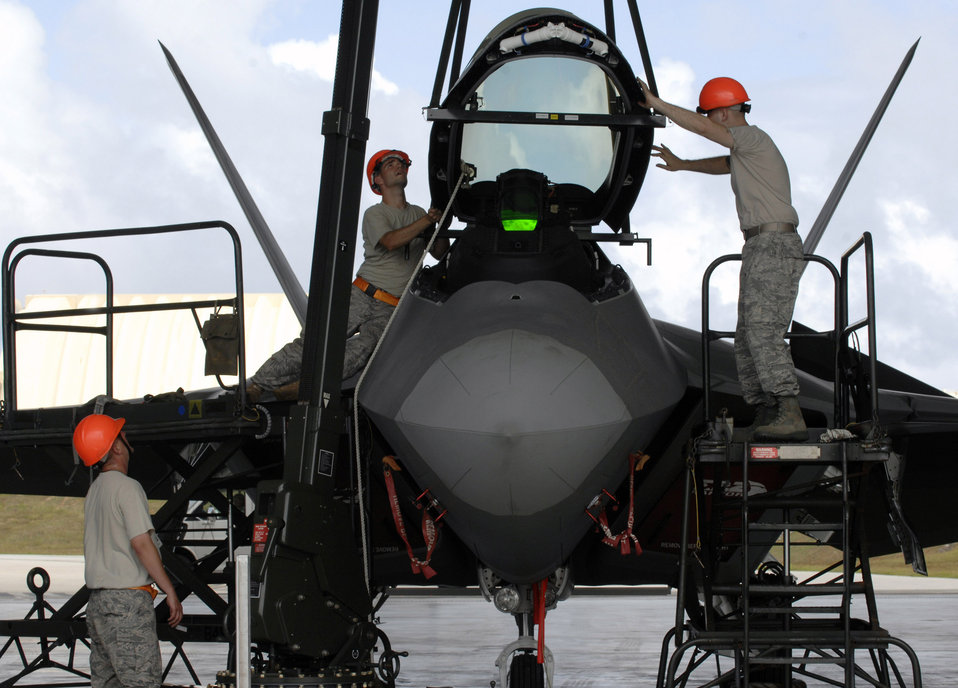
Move it to the left

Staff Sgt. Terry Vickery (left), Staff Sgt. Tim Sullivan, and Senior Airman Ryan Ott install an F-22 Raptor canopy Feb. 18 at Andersen Air Force Base, Guam. The Raptors are deployed from Elmendorf Air Force Base, Alaska, to Guam for three months.